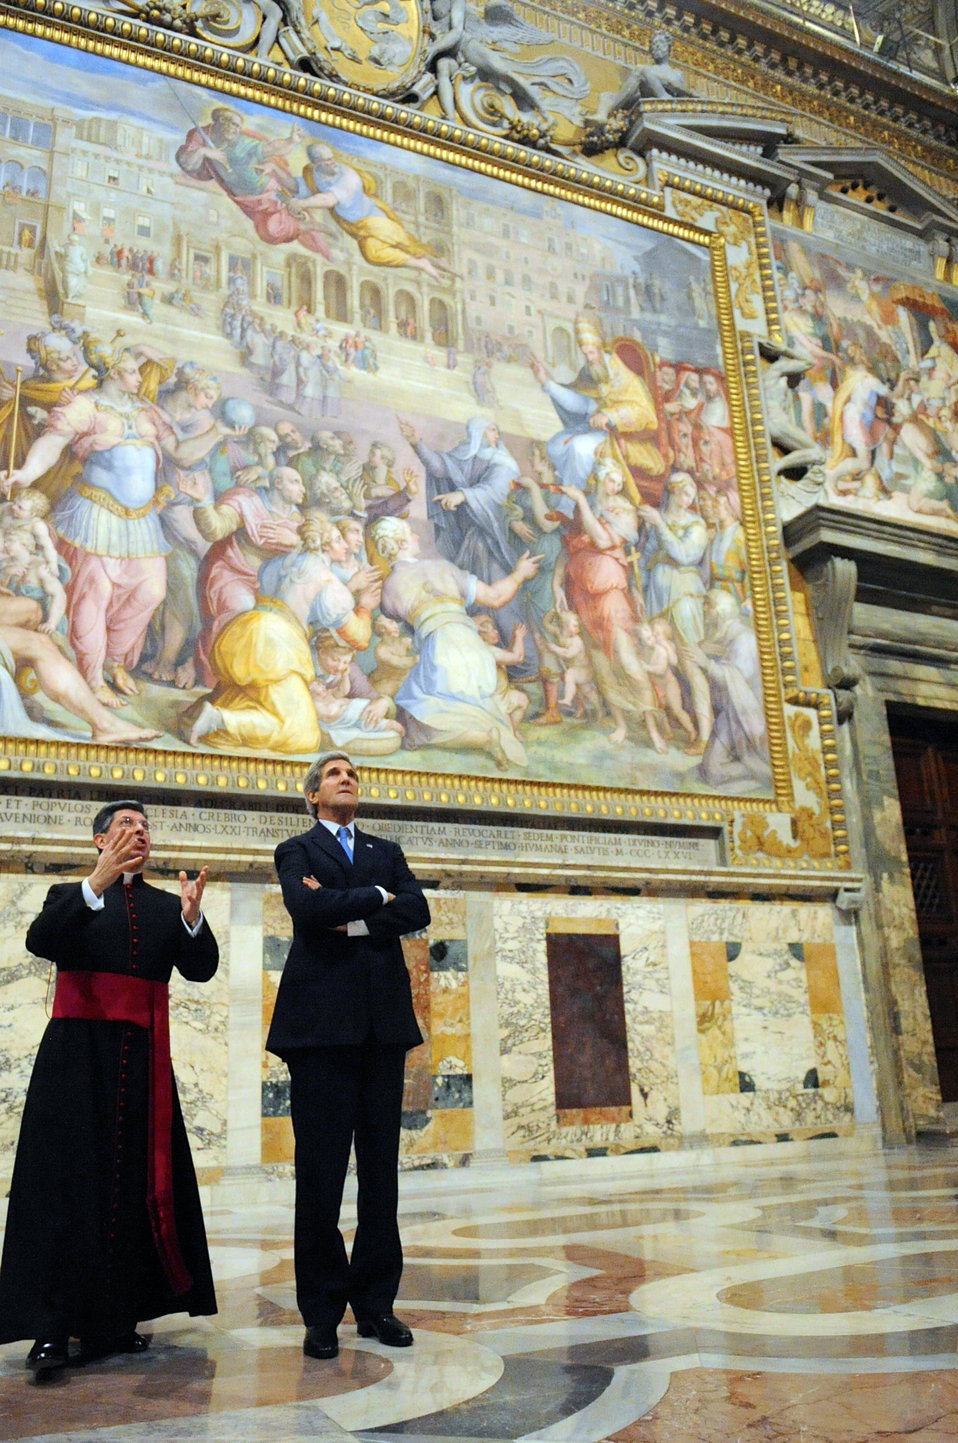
Secretary Kerry Views Artwork During a Tour of the Vatican

Chief of Protocol Monsignor Jose Bettancourt describes artwork in the Vatican for U.S. Secretary of State John Kerry during a visit to Vatican City and Rome, Italy, on January 14, 2014.